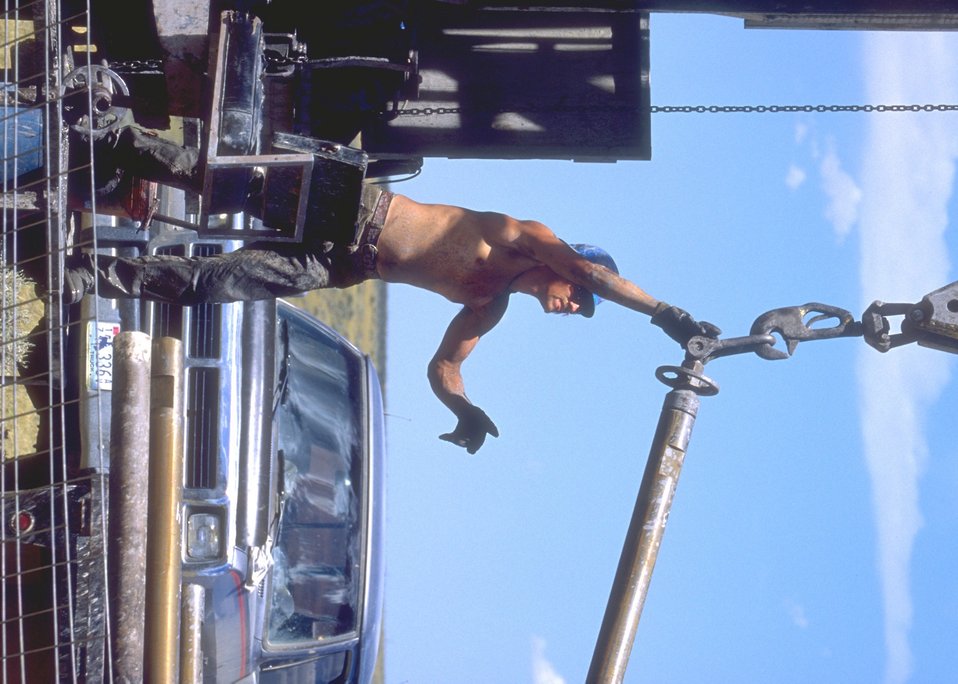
Drill site for coal bed methane, Buffalo Field Office.